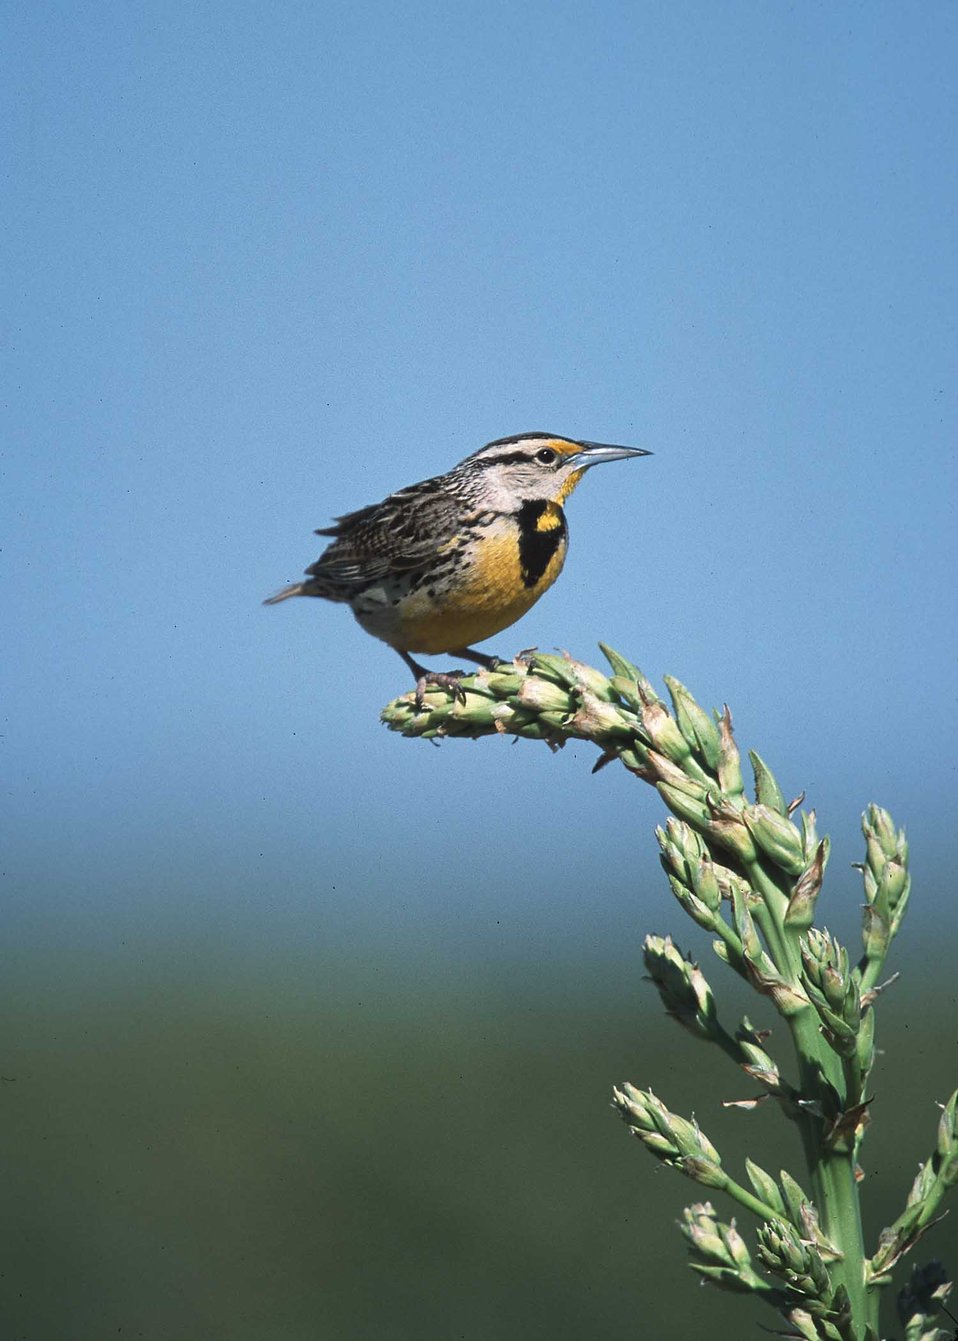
Western meadowlark in eastern New Mexico.